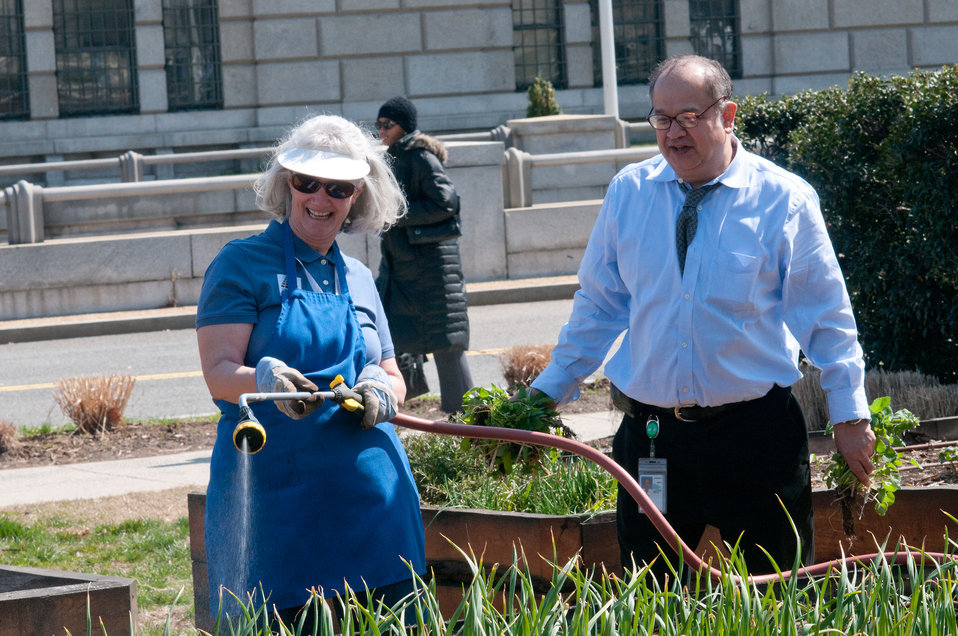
U.S. Department of Agriculture (USDA) Agricultural Research Service Administrative Assistant Pat Dobson waters onion and garlic plants while Operations Program Specialist Richard Fierroz (right) takes weeds to a compost bin at The People's Garden at the U.S. Department of Agriculture (USDA), in Washington DC, on Thursday, March 17, 2011. Volunteers pitch in several times a week, to weed, mulch, plant, water and what ever it takes to grow a wide variety of produce. Although a few are ornamental, most are destined for charity kitchens. Located on the corner of Jefferson Drive, SW and 12th St. SW, people often stop to ask questions about the garden. Part of the volunteers’ training is to be a spokesperson for the People's Garden Initiative, an effort by the USDA that challenges its employees to establish People's Gardens at USDA facilities worldwide or help communities create gardens. People's Gardens vary in size and type, but all have a common purpose - to help the community and the environment.